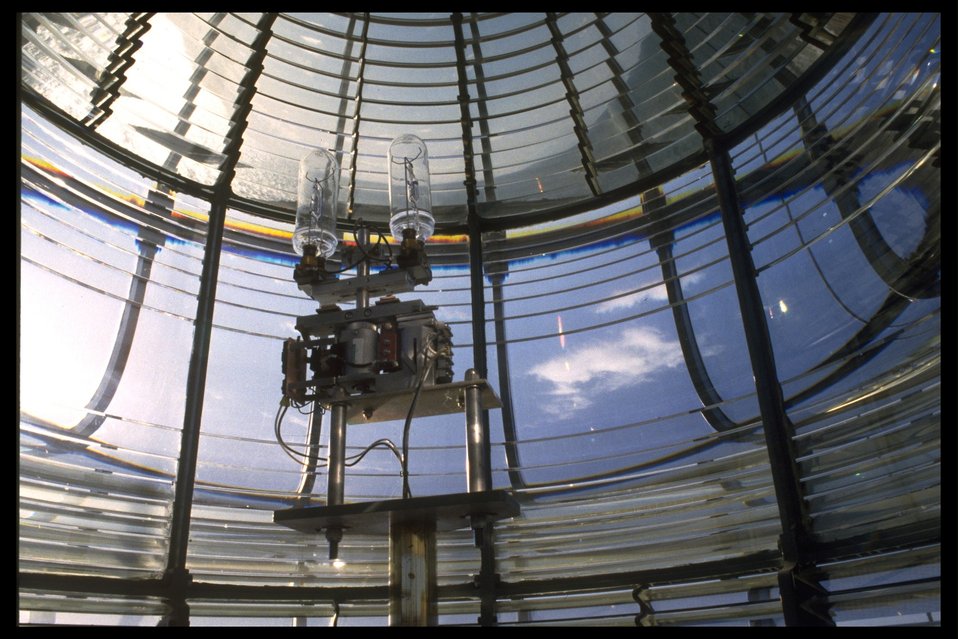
The lightbulb (1000 watt lens) on the interior of the Yaquina Head lighthouse.